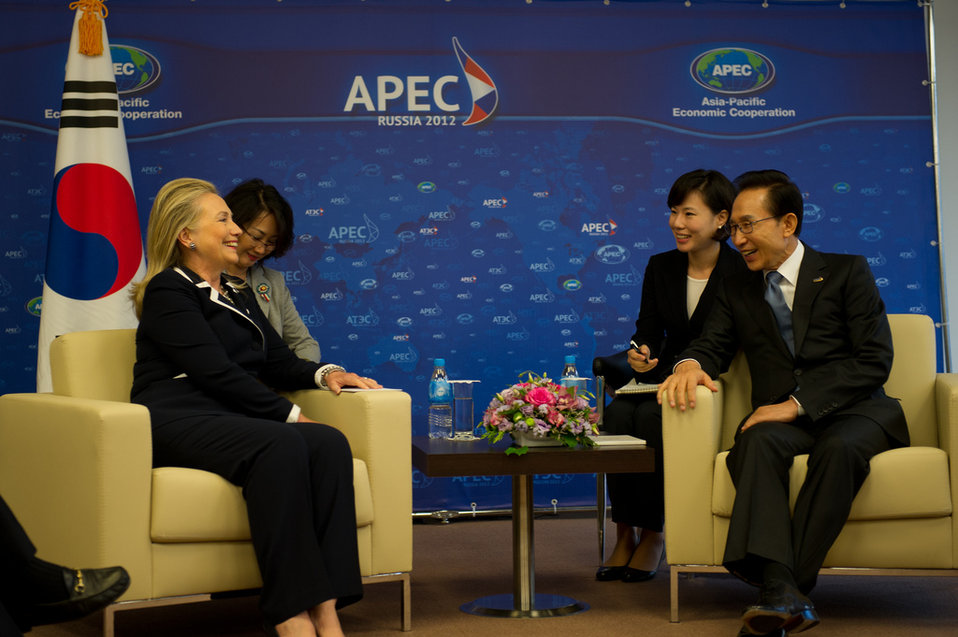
Secretary Clinton Meets With South Korean President Lee

U.S. Secretary of State Hillary Rodham Clinton meets with President Lee Myung-Bak of the Republic of Korea during the Asia-Pacific Economic Cooperation (APEC) Leaders' Week in Vladivostok, Russia, September 9, 2012.